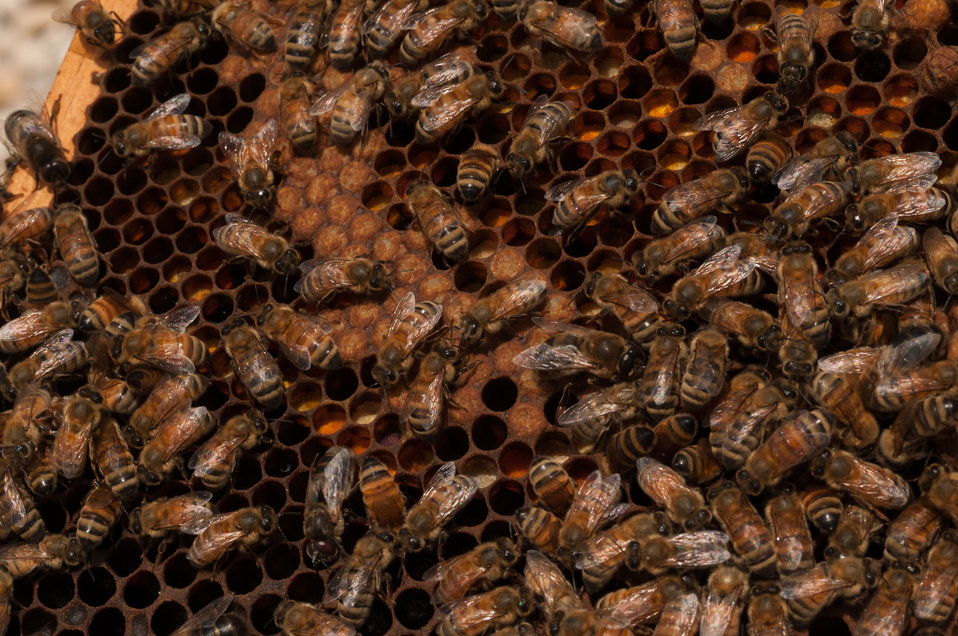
A hive of honey bees hard at work in the apiary atop the U.S.Department of Agriculture (USDA) Jamie Whitten building in Washington, D.C. on May, 22, 2013. Bees are one of nature’s many pollinators for flowers and crops and are crucial in production for fruits and vegetables. Some of the crops pollinated by bees are apples, squash, and almonds. Honeybees are responsible for pollinating approximately $15 billion worth of crops in the U. S. each year. The U. S. Department of Agriculture (USDA) Agricultural Research Service (ARS) and Natural Resource Conservation Service (NRCS) are working on ways to mitigate the decline of the bee population by coordinating pollination research, conservation, and education among USDA agencies and their partners.